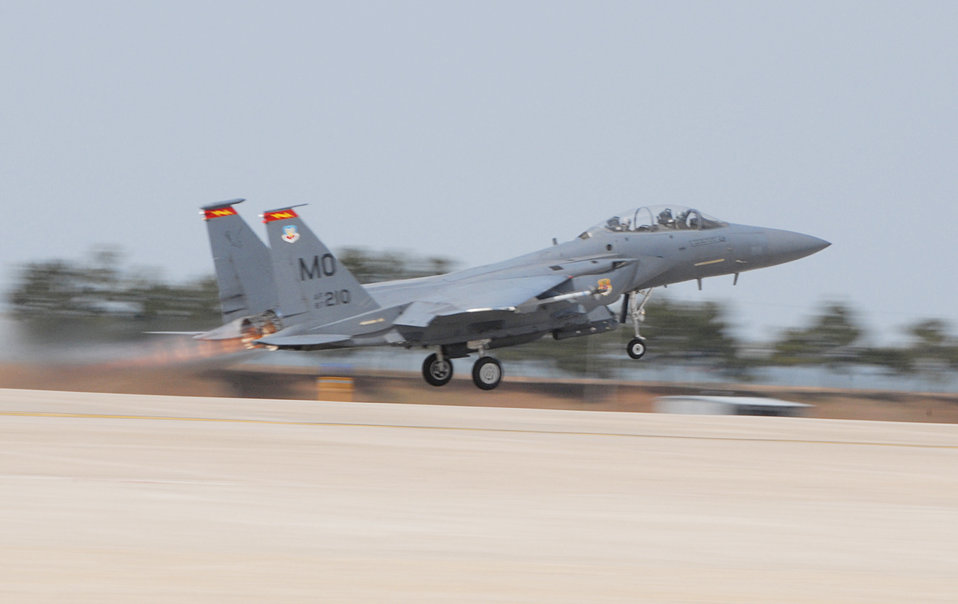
Kunsan Airmen train with South Korean fighter pilots

An F-15E Strike Eagle from the 391st Expeditionary Fighter Squadron takes off for some aerial maneuvers during an exercise March 16, 2010, at Kunsan Air Base, South Korea. The exercise places U.S. and South Korea air force pilots together for several realistic aerial exercises to familiarize with each other's tactics and procedures.